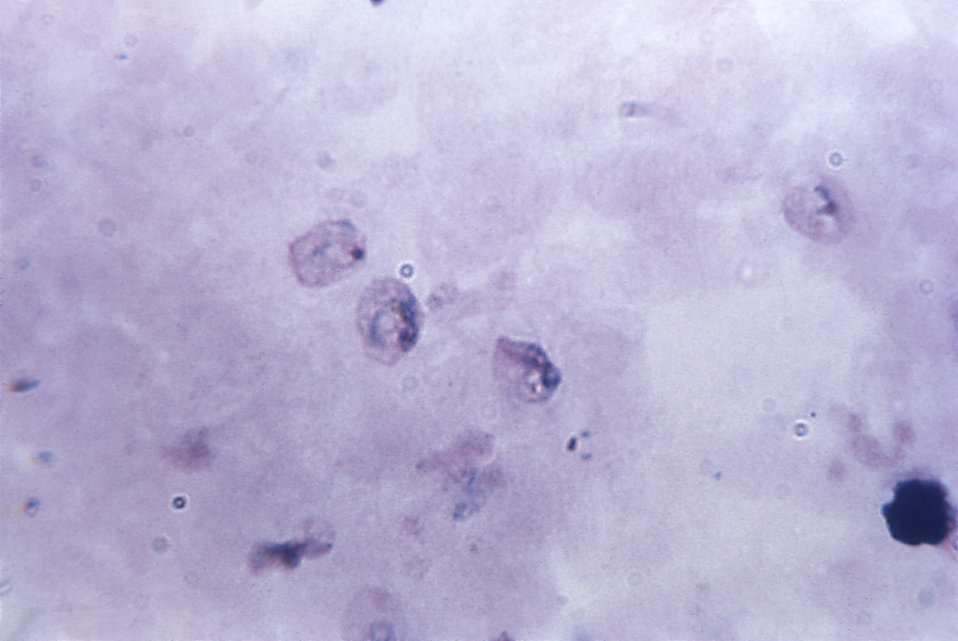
This thick film micrograph revealed growing Plasmodium spp. trophozoites; Sch�'s dot stippling is clearly defined.